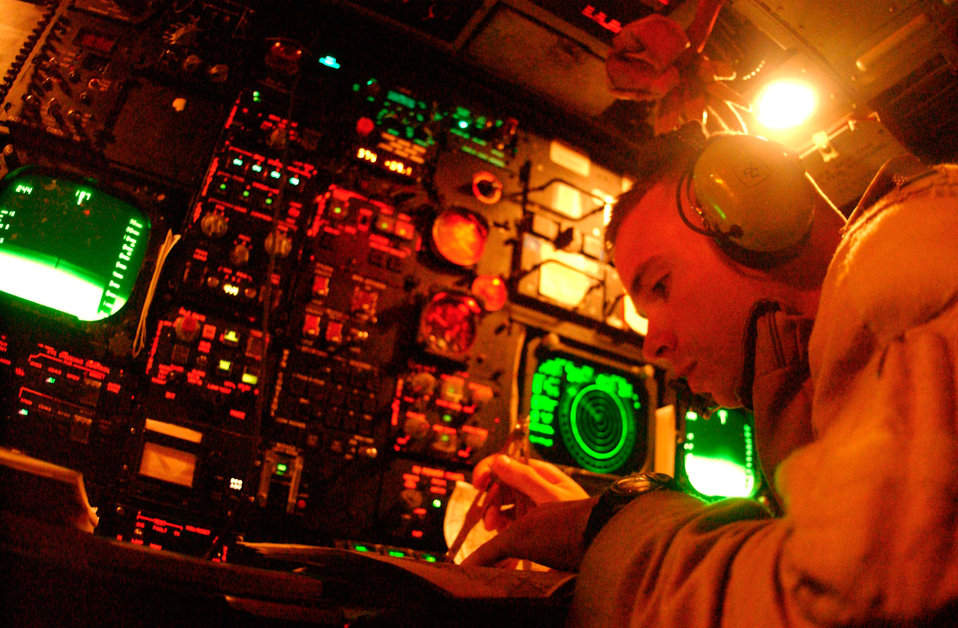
Target check

OPERATION IRAQI FREEDOM -- A 40th Expeditionary Bomb Squadron B-52 Stratofortress radar navigator, runs a weapons targeting check during an Iraqi bombing mission March 30, 2003, in support of Operation Iraqi Freedom.